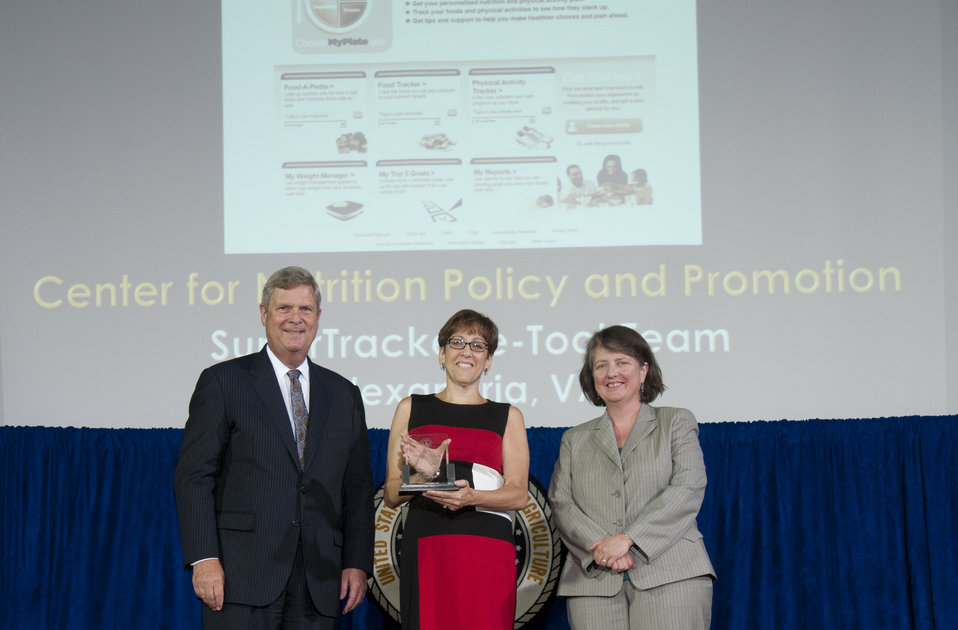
Agriculture Secretary Tom Vilsack and Agriculture Deputy Secretary Kathleen Merrigan present the Secretary’s Honor Award to SuperTracker e-Tool Team Center for Nutrition Policy and Promotion (CNPP) group leader Jacqueline Haven at the U.S. Department of Agriculture (USDA) 64th Annual Honor Awards Ceremony in Washington, D.C. on Wednesday, Sept. 12, 2012. The SuperTracker e-Tool Team provided exceptional teamwork and commitment to the vision, development, and implementation of the MyPlate SuperTracker interactive tool serving the American Public in applying the Dietary Guidelines for Americans.